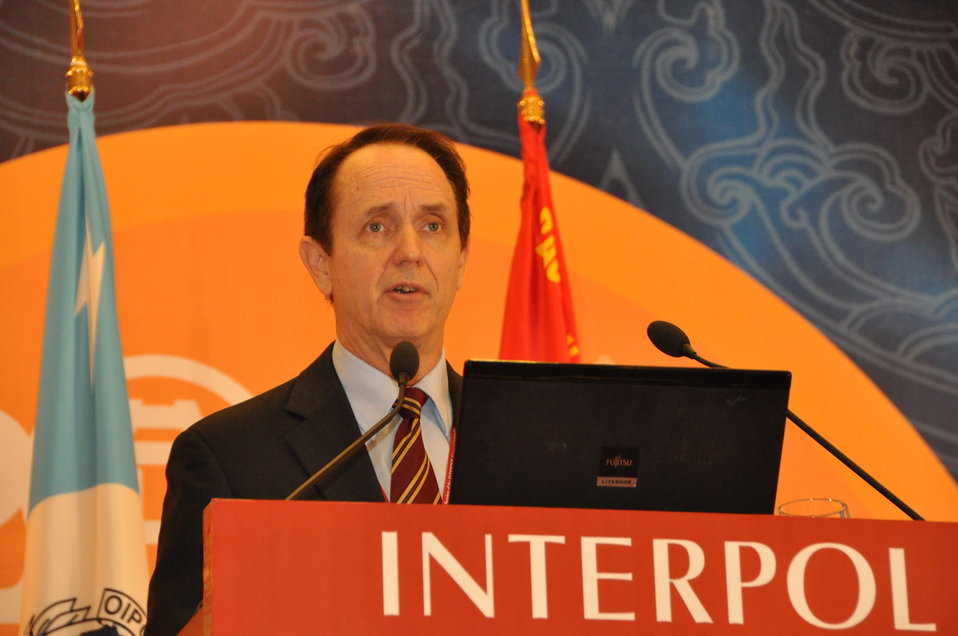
USAID MIssion Director Francis Donovan at the INTERPOL General Assembly in Hanoi, November 2011

Project Predator, an initiative to protect and save the world's last surviving wild tigers, was unveiled today at the 80th INTERPOL General Assembly, a gathering of global law enforcement support from the organization's 190 member countries.

Created by INTERPOL, Project Predator unites the efforts of police, customs and wildlife officials in the 13 countries in Asia where wild tigers can still be found. This new partnership under the Global Tiger Initiative brings together officials from the 13 tiger range countries, the U.S. Agency for International Development (USAID), the UK's Department for Environment, Food and Rural Affairs (Defra), the World Bank, the Smithsonian Institution and INTERPOL.